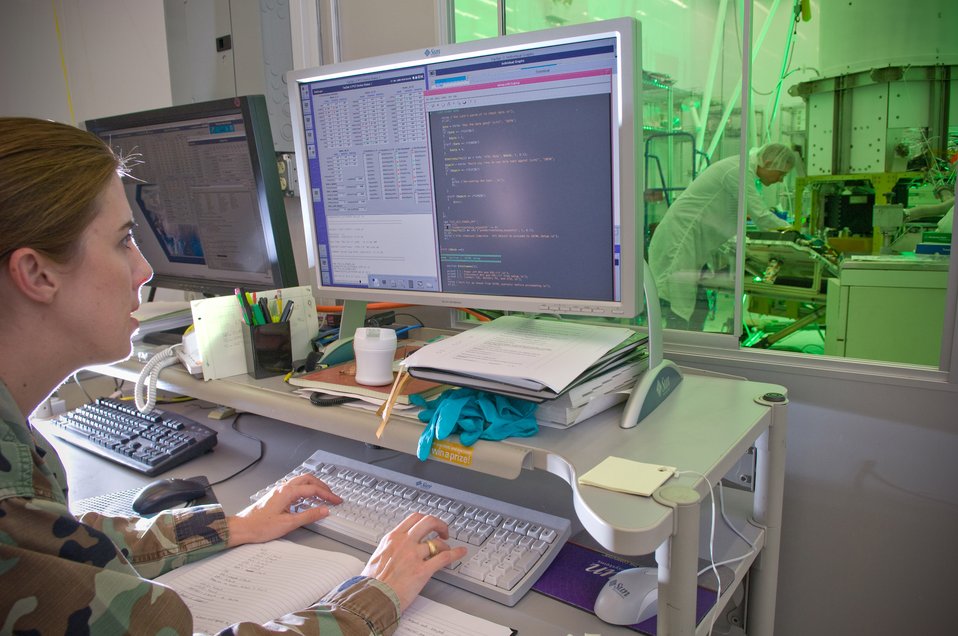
TacSat-3 Preparation

Capt. Jennifer Guarnieri works on a test script for the Tactical Satellite-3 that will be launched in October, while in the next room Martin Leahy performs voltage and continuity tests on the satellite. Captain Guarnieri is a test engineer at the Air Force Research Laboratory at Kirtland Air Force Base, N.M. Mr. Leahy is a field engineer with ATA Aerospace.